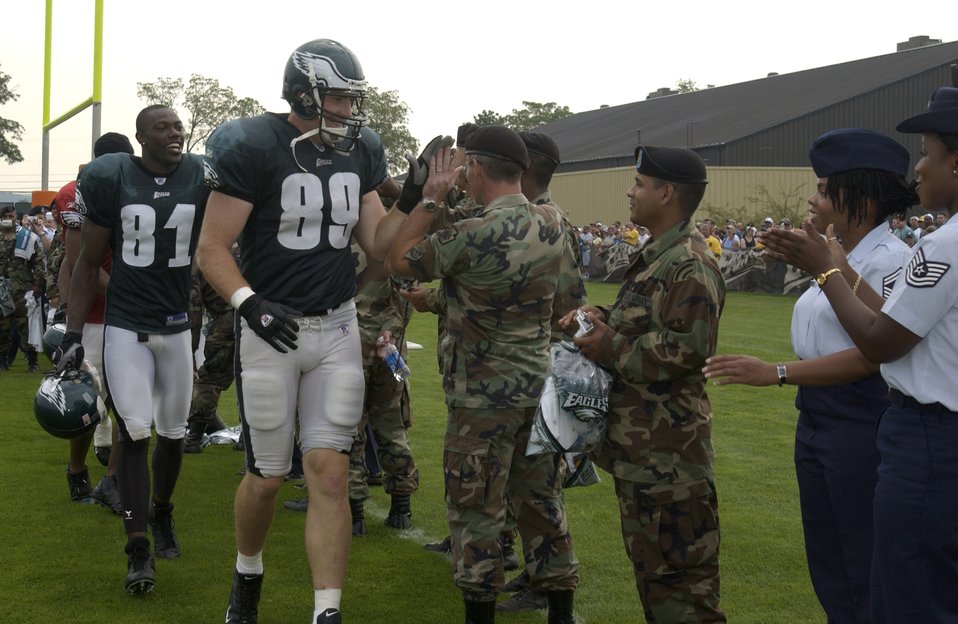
Eagles show appreciation

BETHLEHEM, Pa. -- Philadelphia Eagles Tight End Chad Lewis, Wide Receiver Terrell Owens, and Quarterback Donovan McNabb,